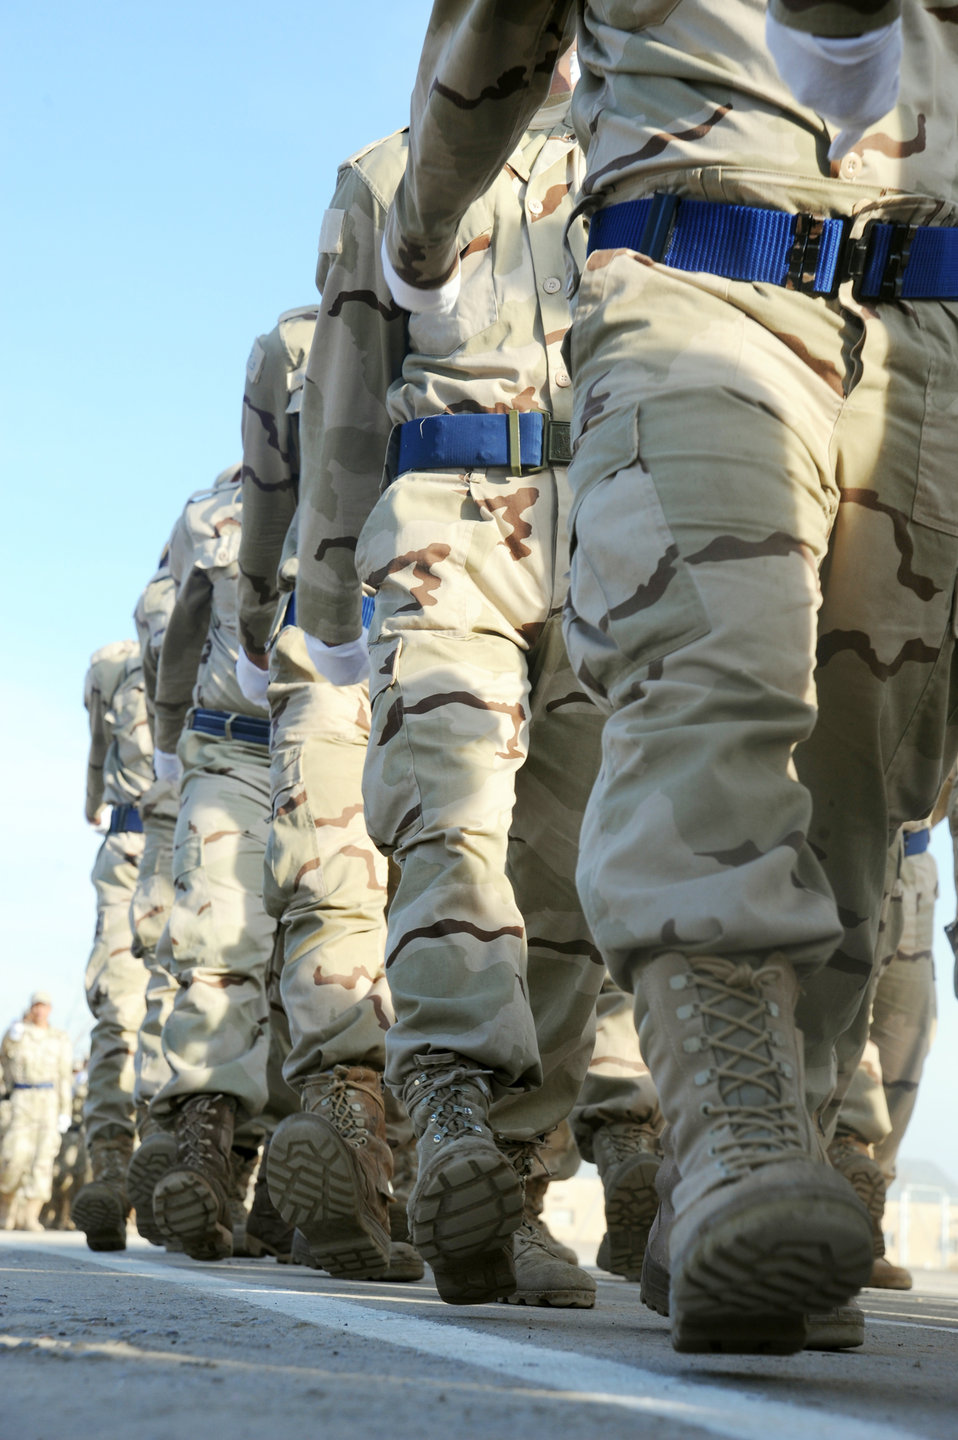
New recruits get a leg up

Iraqi air force recruits march in a pass in review parade during their graduation ceremony from the basic military training Top Off course at the Iraqi Air Force Training School Dec. 28, 2009, at Camp Taji, Iraq. The staff incorporated discipline, marching and drill during the morning sessions and academics in the afternoon.